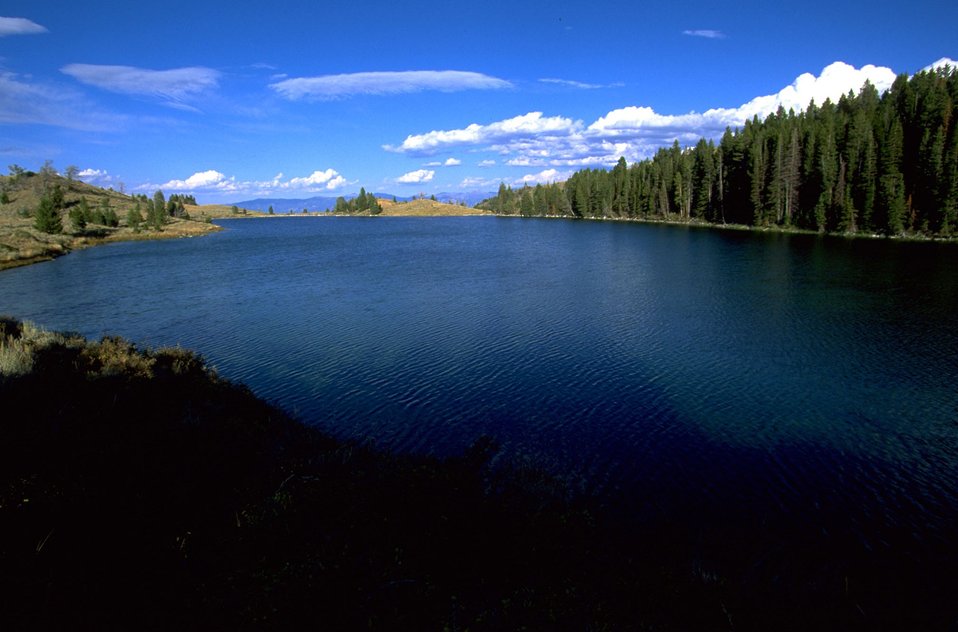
Reservoir Lake